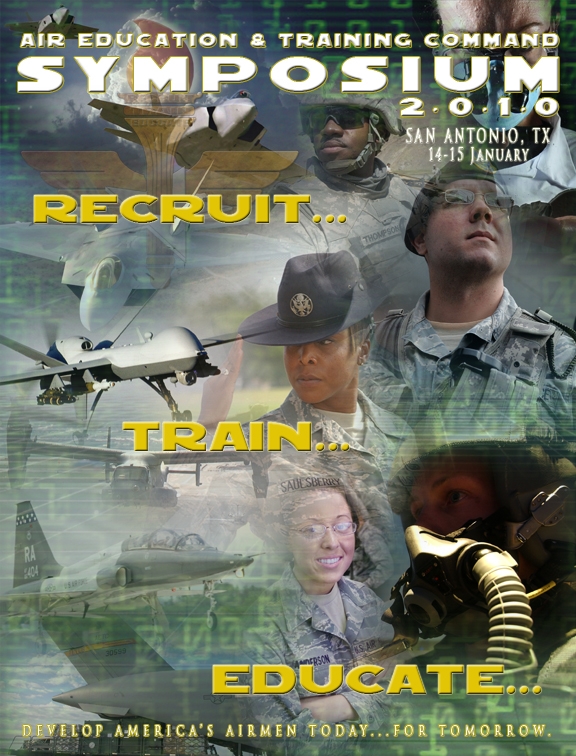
AETC symposium

The 2010 Air Education and Training Command Symposium will be held Jan. 14 and 15 at the Henry B. Gonzalez Convention Center in San Antonio.